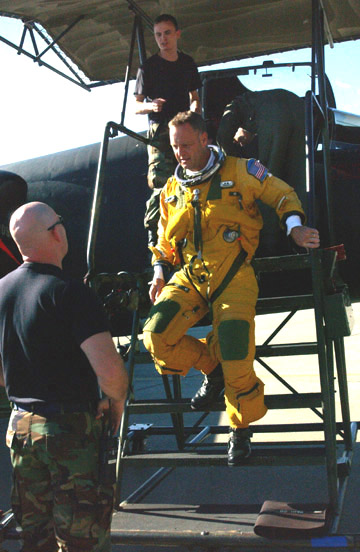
Rita reconnaissance returns

BEALE AIR FORCE BASE, Calif. -- Lt. Col. Bourke Milligan returns from a U-2 mission to take images before Hurricane Rita hit the Gulf Coast region. Federal Emergency Management Agency officials asked the 9th Reconnaissance Wing to take images over Louisiana and Texas to assess before Hurricane Rita hit the area. The wing's Airmen are standing by to conduct additional post-hurricane missions to help assess the damage and assist emergency responders. Colonel Milligan is a pilot with the 99th Reconnaissance Squadron.